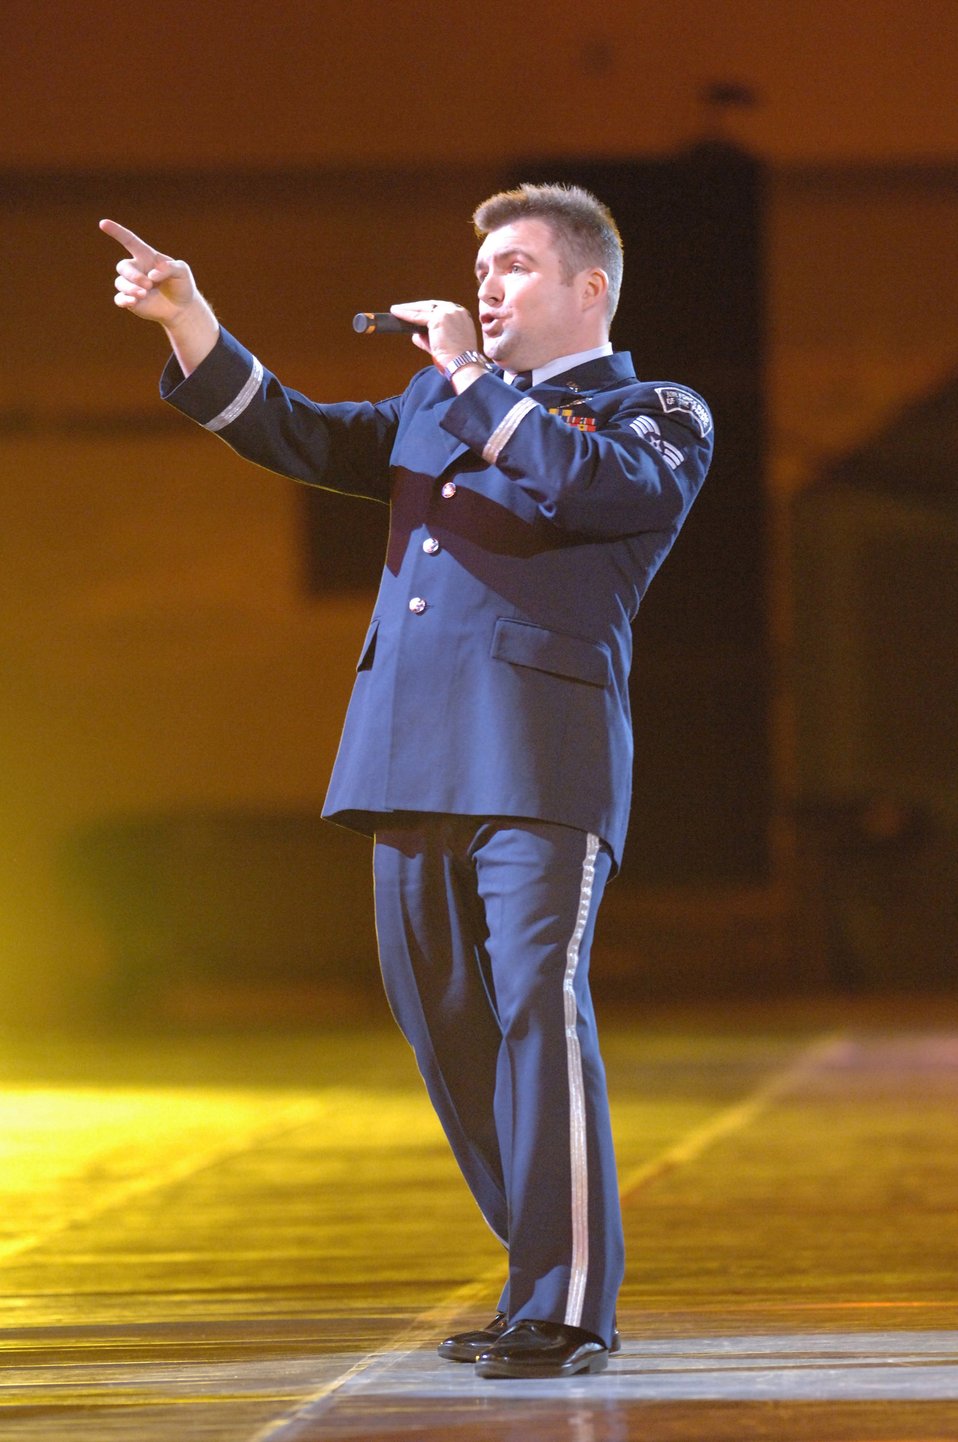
Airmen march to the beat in Tokyo

TOKYO (AFPN) -- Staff Sgt. Jamie Gilley takes center stage during the Marching Festival 2005 at Budokan Hall, Tokyo, Japan. The two-day festival, featuring over 1,000 performers, showcased U.S. and Japanese military bands, taiko drummers and a ceremonial drill team. Over 50,000 people attended the weekend shows. Air Force band members from around the world participated in the program. Sergeant Gilley is a member of the U.S. Air Force Band of the Pacific-Asia.